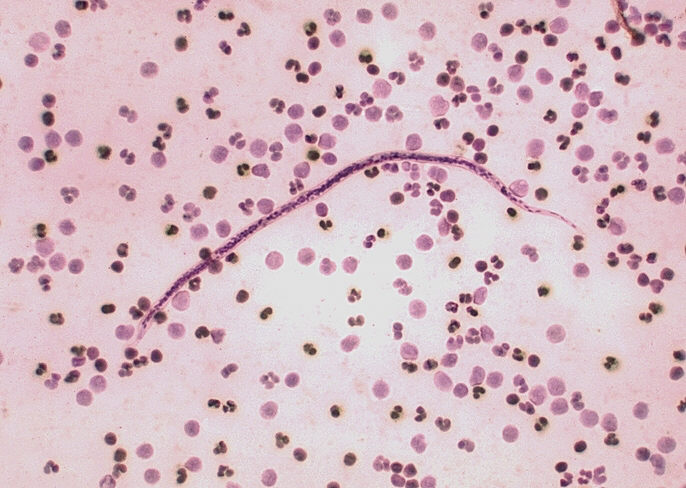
Loa loai, agent of filariasis. Anterior end. Parasite.